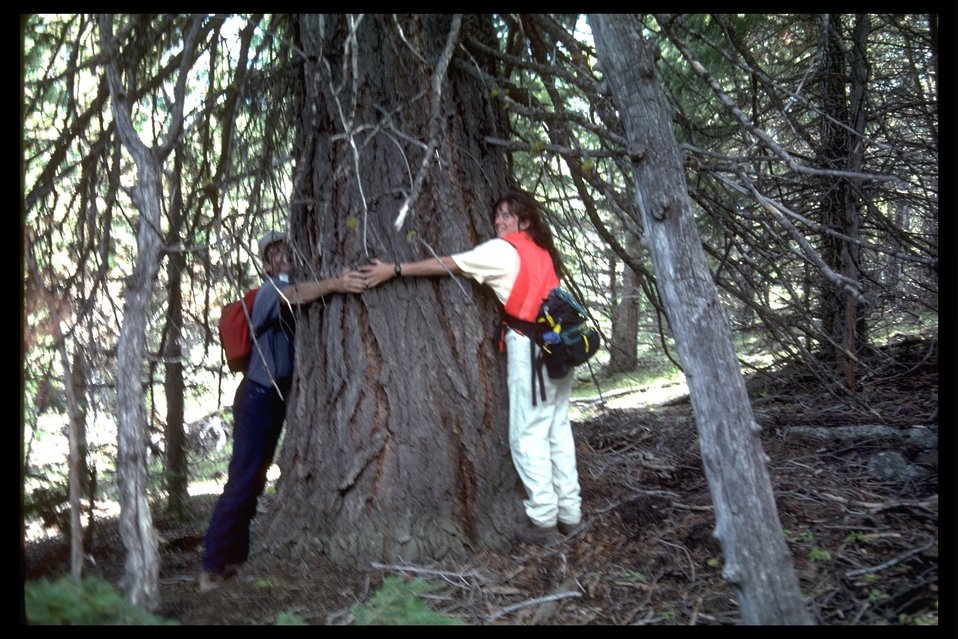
Large Fir tree on Fence Creek with two people stretching their arms around it.